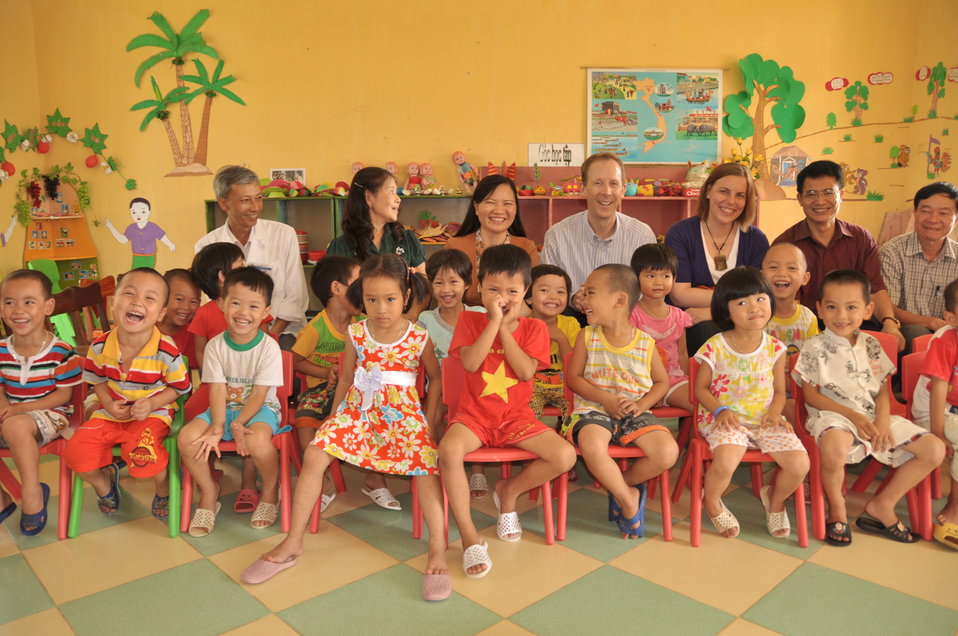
USAID Delivers Deworming Medication to Kindergartners in Nam Dinh Province

Children of Vietnam's Nam Dinh Province receive deworming medicine in a program supported by USAID and World Vision Australia.
June 1, 2013